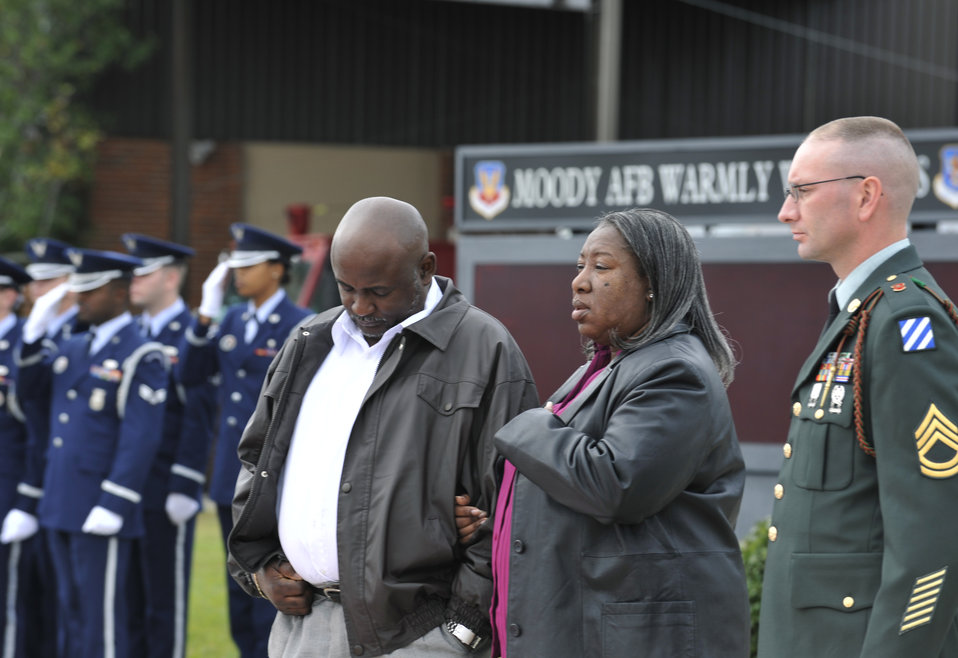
Moody community pay respect to fallen warrior

Fred Williams Jr. and his wife watch as their son, Army Staff Sgt. Briand Williams, a fallen Soldier, is unloaded from an aircraft Dec. 3, 2009, at Moody Air Force Base, Ga. Sergeant Williams served in the Army since 2002 and was killed in action in Iraq Nov. 22, 2009. He was assigned to the 1st Battalion, 10th Field Artillery Regiment, 3rd Brigade Heavy Combat Team, 3rd Infantry Division at Fort Benning, Ga.